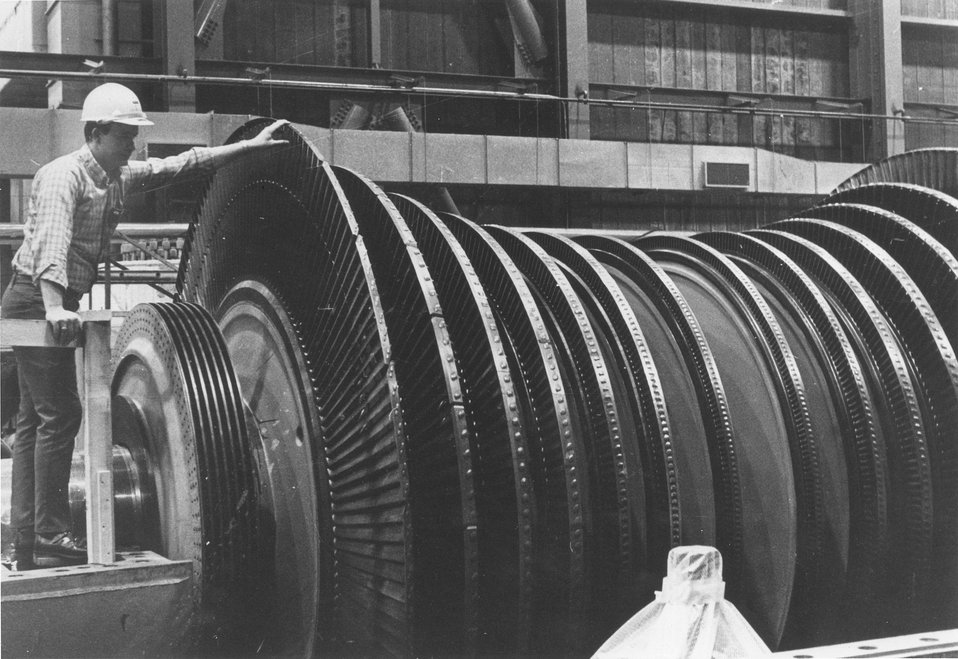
Engineering assistant Tom Becknell inspects the turbine blades on one section of a 210-foot-long turbine generator installed at Commonwealth Edison Company's Dresden nuclear power station, near Morris, Illinois. c. 1970